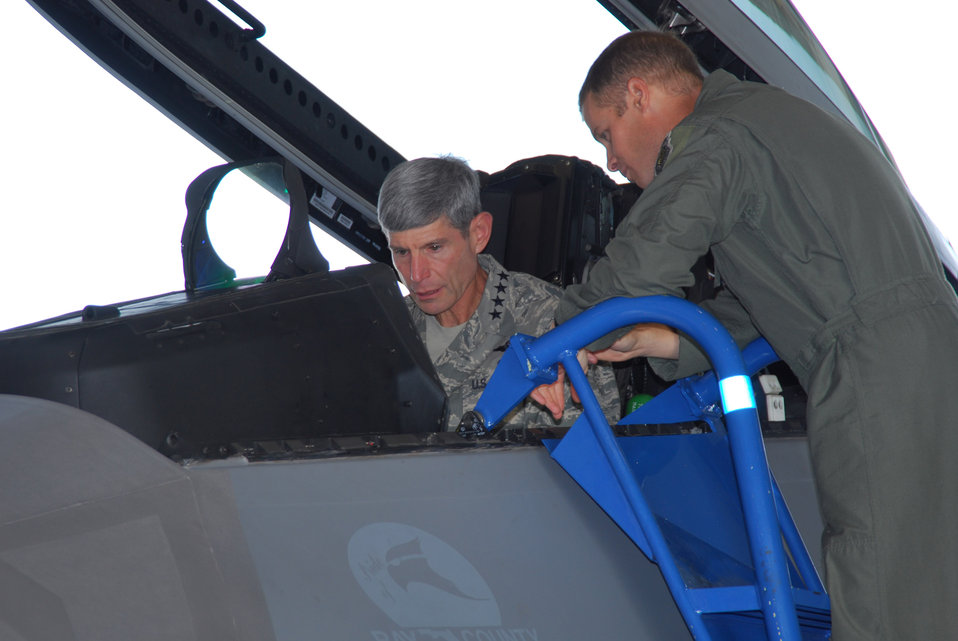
CSAF visits Tyndall AFB, Fla.

Lt. Col. Derek France, 43rd Fighter Squadron commander, discusses the capabilities and features of the F-22 Raptor with Air Force Chief of Staff Gen. Norton A. Schwartz during his visit to Tyndall Air Force Base, Fla., Sept. 3